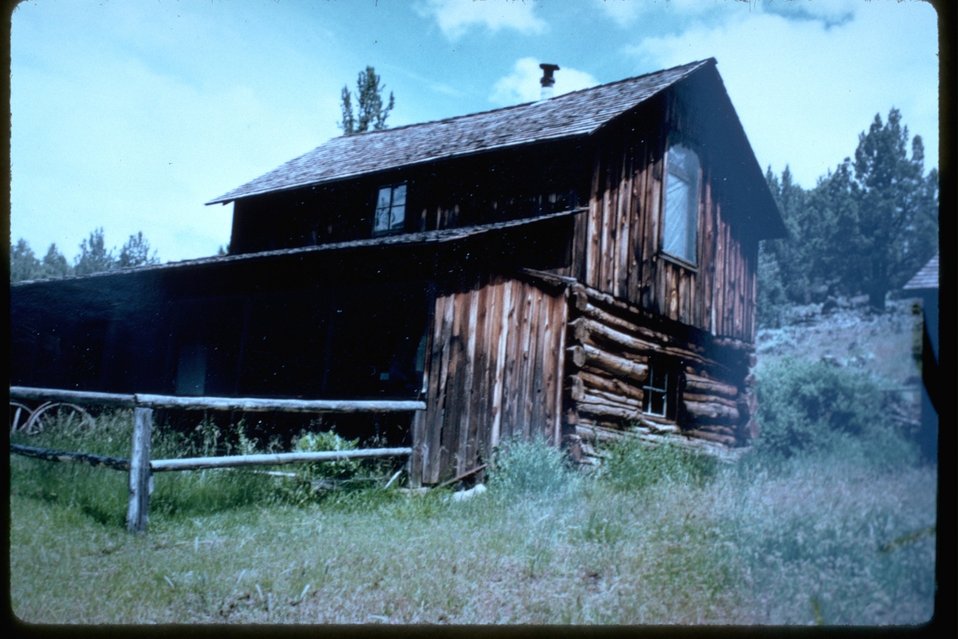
The main house of the Riddle Brother's Ranch.